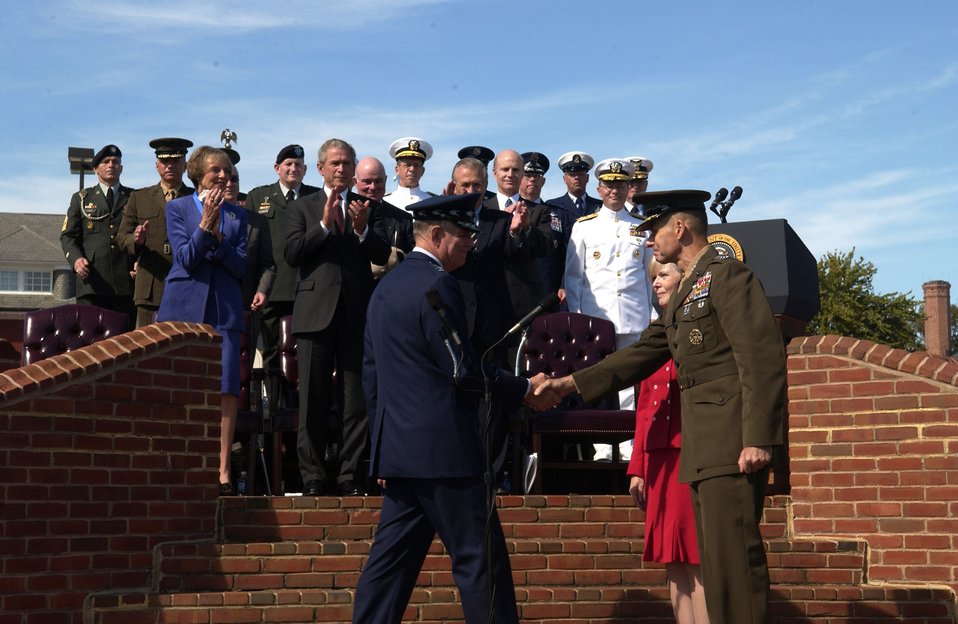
US Armed Forces Retirement and US Armed Forces Hail Ceremony

FORT MYER, Va. -- Gen. Richard B. Myers, 15th chairman of the Joint Chiefs of Staff, congratulates Marine Corps Gen. Peter Pace on becoming the 16th chairman of the Joint Chiefs of Staff here Sept. 30. General Myers retired after 40 years of service, as General Pace became the 16th Chairman and first Marine to hold the nation's highest military position.